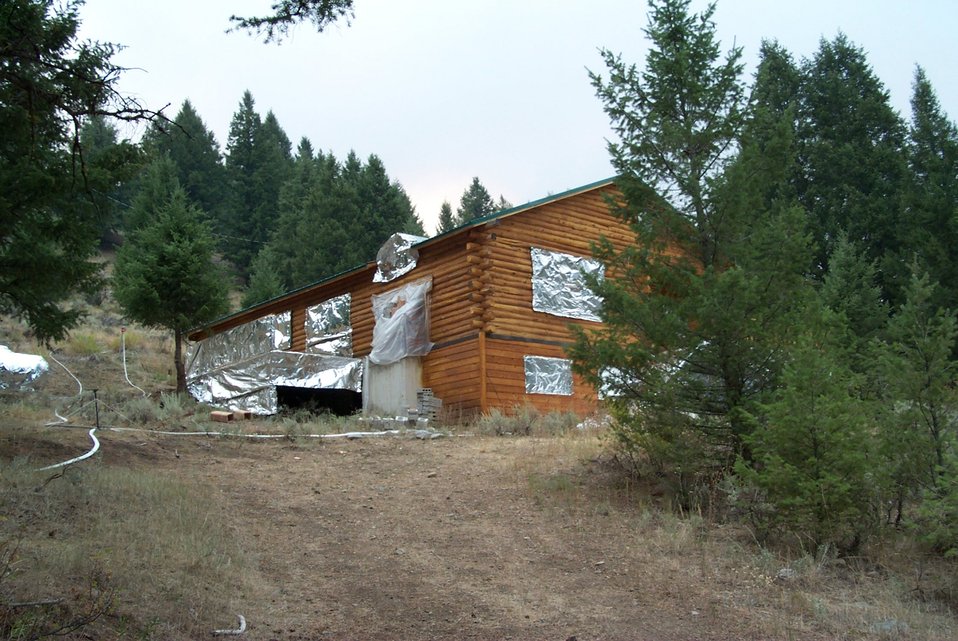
Fire retardant measures Urban interface Fire Clearwater Fire Salmon Field Office USRD Upper Snake River District